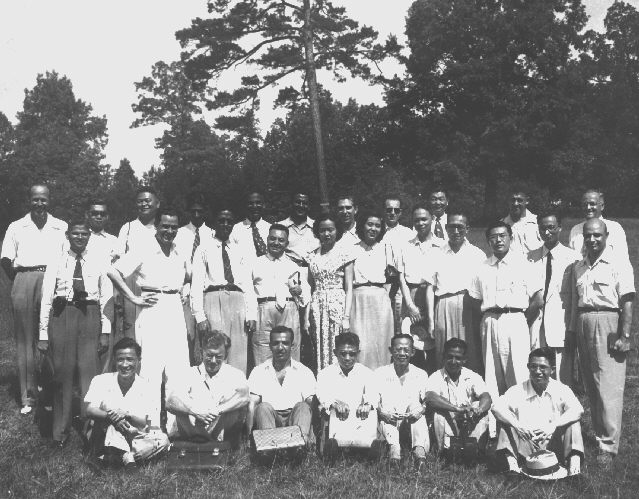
Foreign public health trainees.